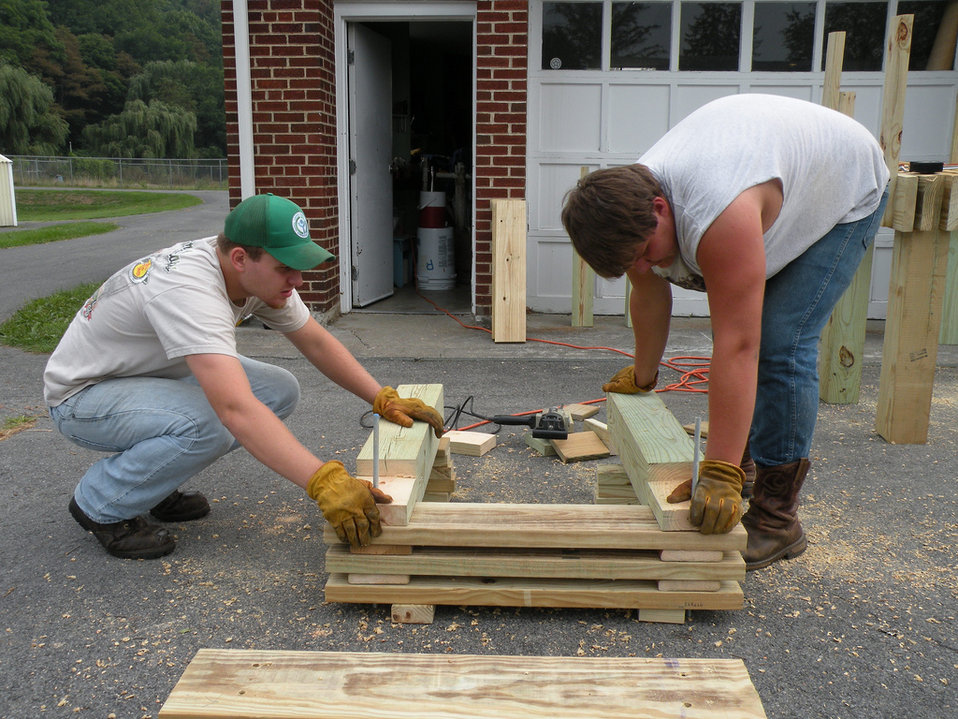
Building benches

U.S. Fish and Wildlife Service